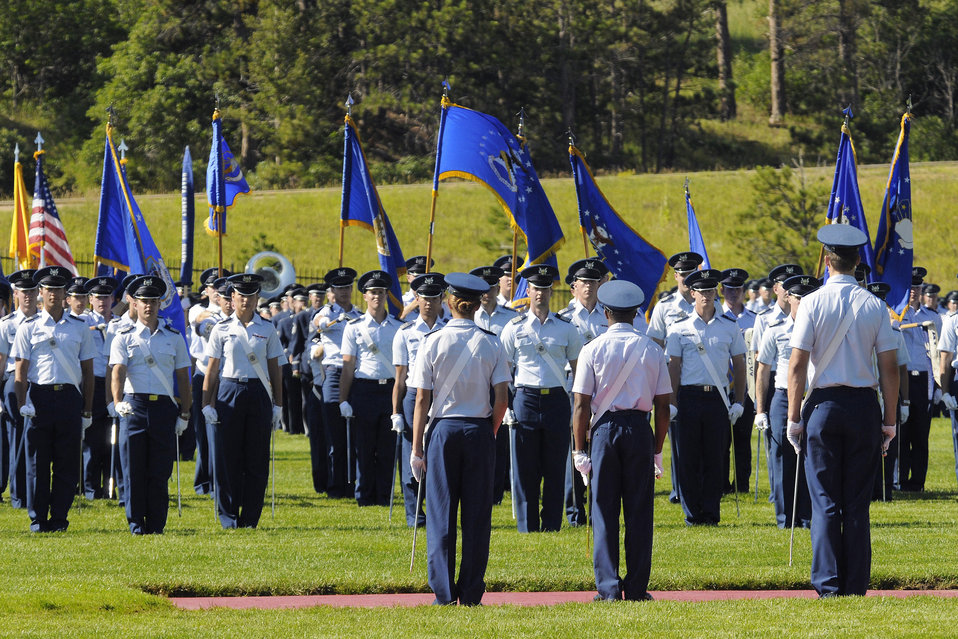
Academy acceptance parade

U.S. Air Force Academy cadets march on Stillman Field during the Acceptance Parade Aug. 5 at the Academy in Colorado. The parade marks the official end of Basic Cadet Training and formally welcomes the new class into the cadet wing.